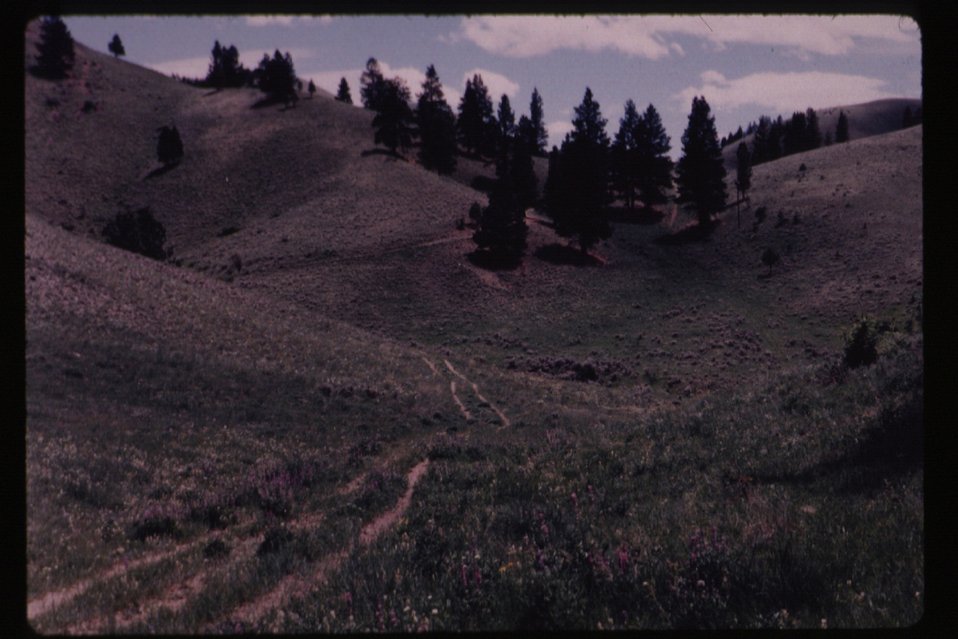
Historic route above Kriley Gulch Lewis and Clark Trail Salmon Field Office UCSC Upper Columbia Salmon Clearwater District